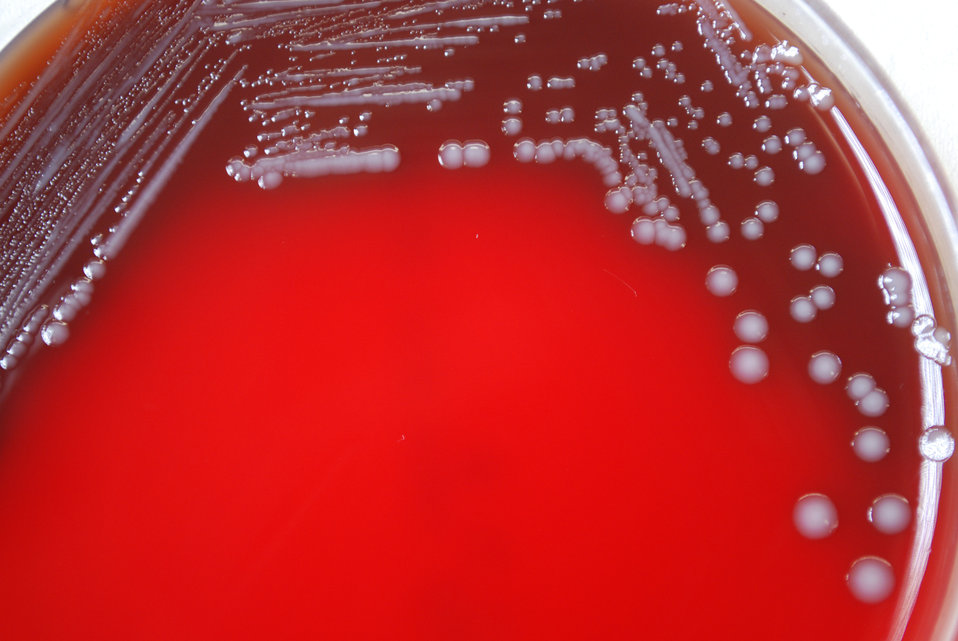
As a closer view of PHIL 12259, and a slightly-closer view of PHIL 12260, this photograph depicts the colonial morphology displayed by Gram-negative Yersinia pestis bacteria, which was grown on a medium of sheep's blood agar (SBA), for a 72 hour time period, at a temperature of 37�C.